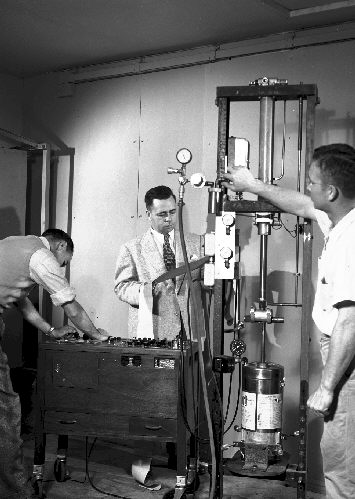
Laboratory Operations, Savannah, GA.